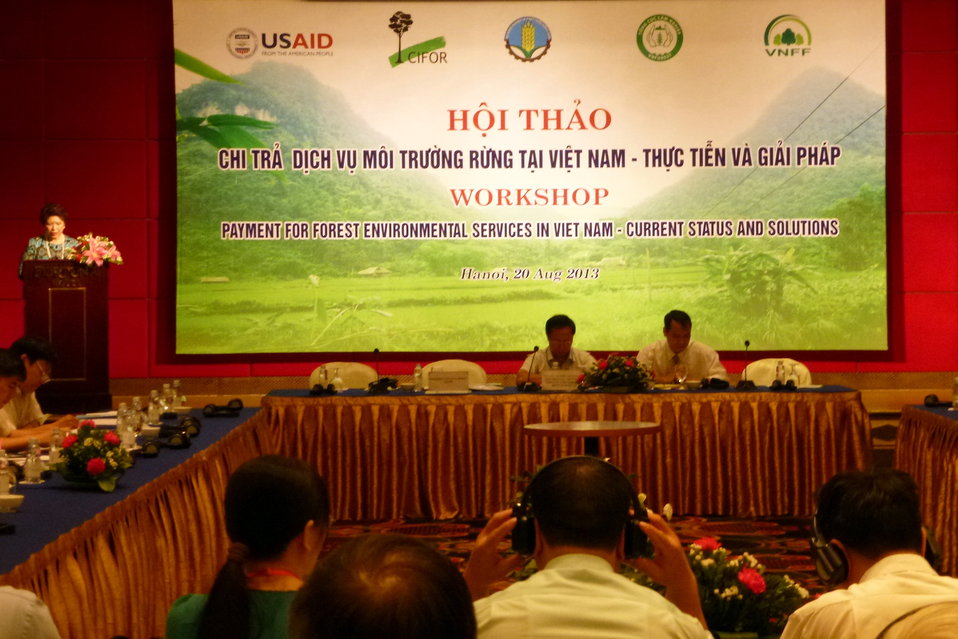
Payment for Forest Environmental Services Workshop

Hanoi, August 20, 2013